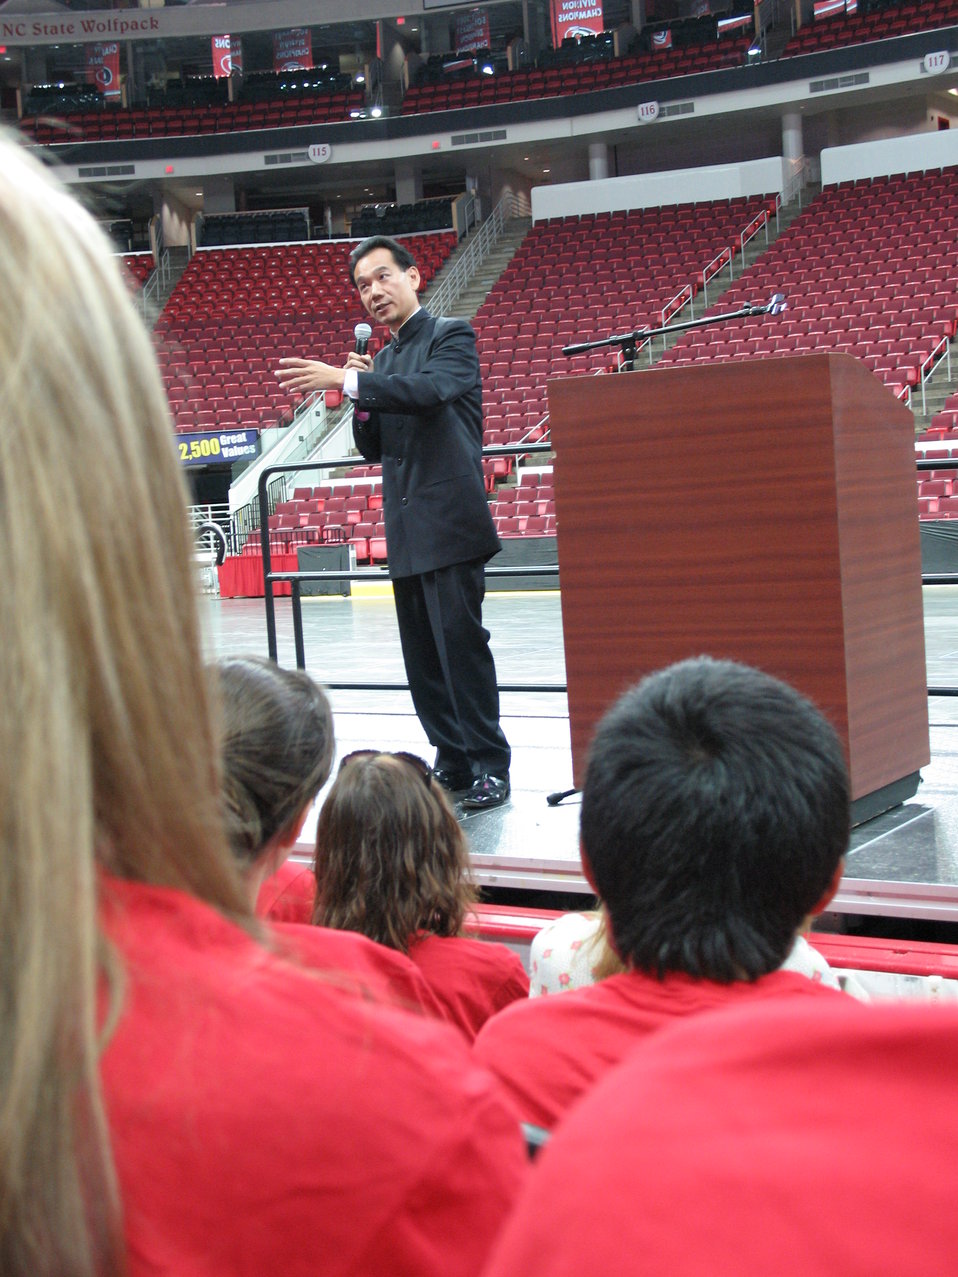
Da Chen speaking at NCSU convocation